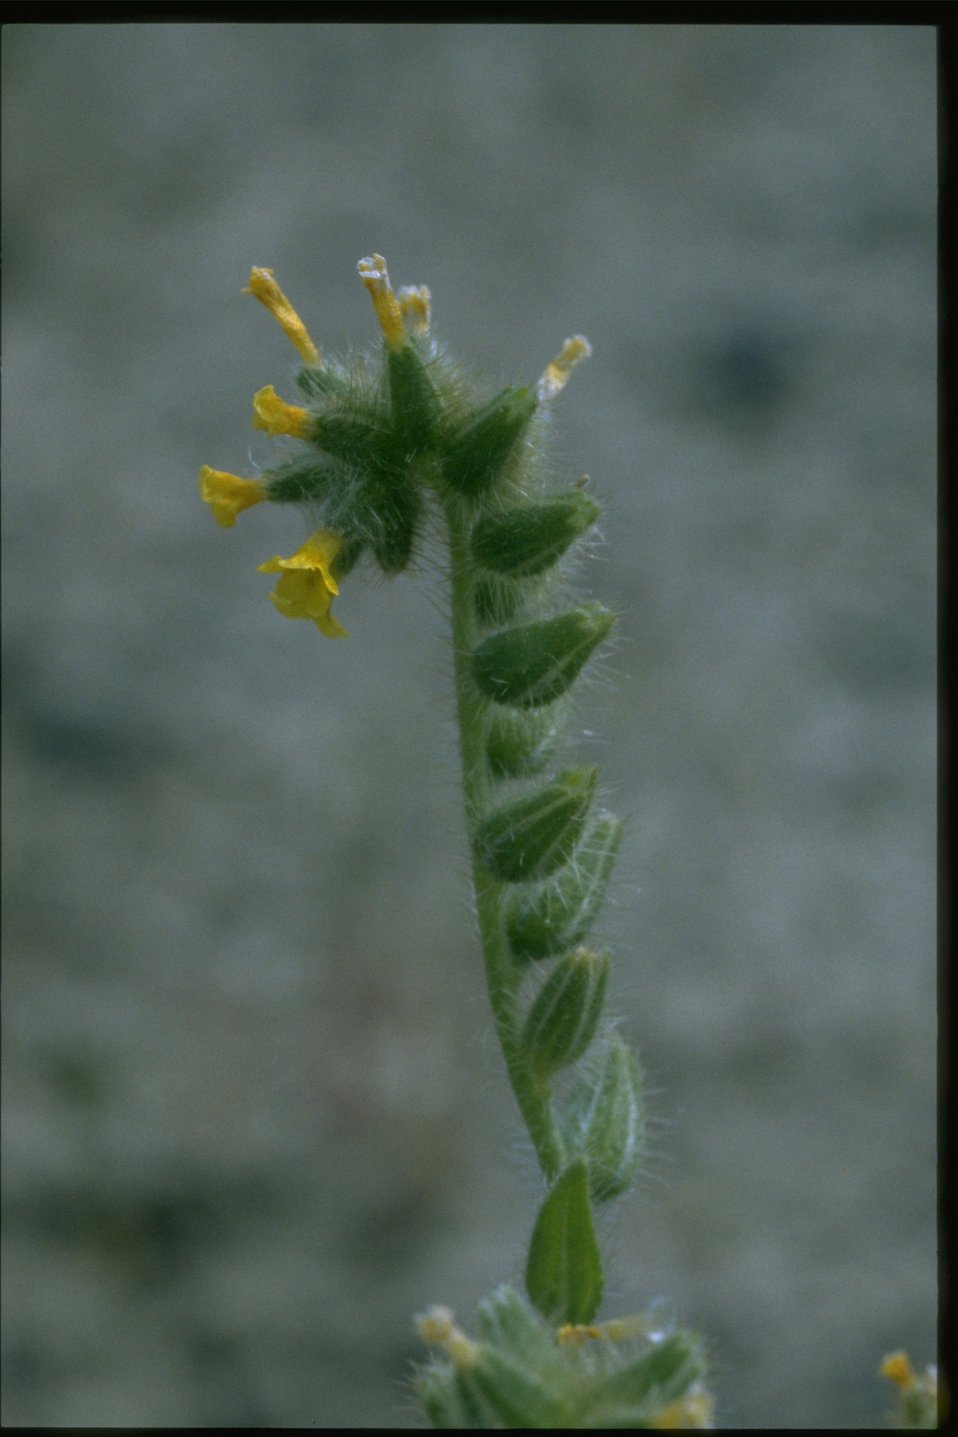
Closeup shot of Sandwort wildflower.